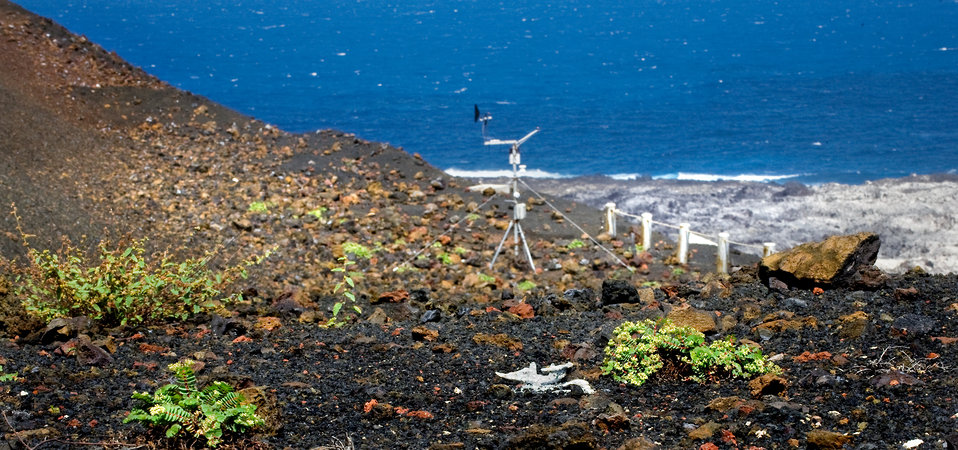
Robert's Plants

Ascension Spurge (E. origanoides), an endangered species of plant found only on the Ascension Island, predominantly on the property used by the 45th Operations Group, Detachment 2, Ascension Auxiliary Airfield (AAF), in the South Atlantic Ocean. These green leafed red stemmed plants are growing wild near a roadway hairpin turn, halfway up a hill. In the background is a weather station that records environmental conditions for the nearby spurge. Ongoing studies by the Computer Sciences Raytheon contract environmental engineering associates have taught them that this endemic plant survives best in these remote locations. Understanding the weather can help choose better locations and conditions to replant and promote growth of this small plant. Evasive plant such as the one in the background competing for space that the spurge needs to establish itself in and send roots deep into the rocky soil. Although, all U.S. Air Force bases have environmental programs, this small remote island environment allows easy observation of the efforts supporting the endangered spurge plant and self-sufficient water, power and waste programs.